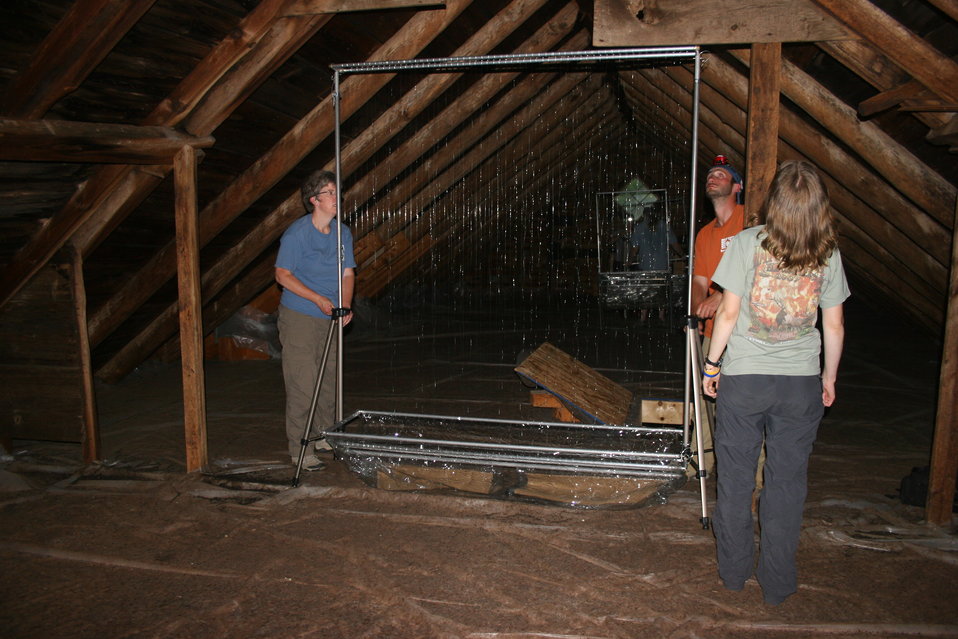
Biologists setting harp trap

Biologists set up harp traps to capture bats as they leave the roost to feed for the night.